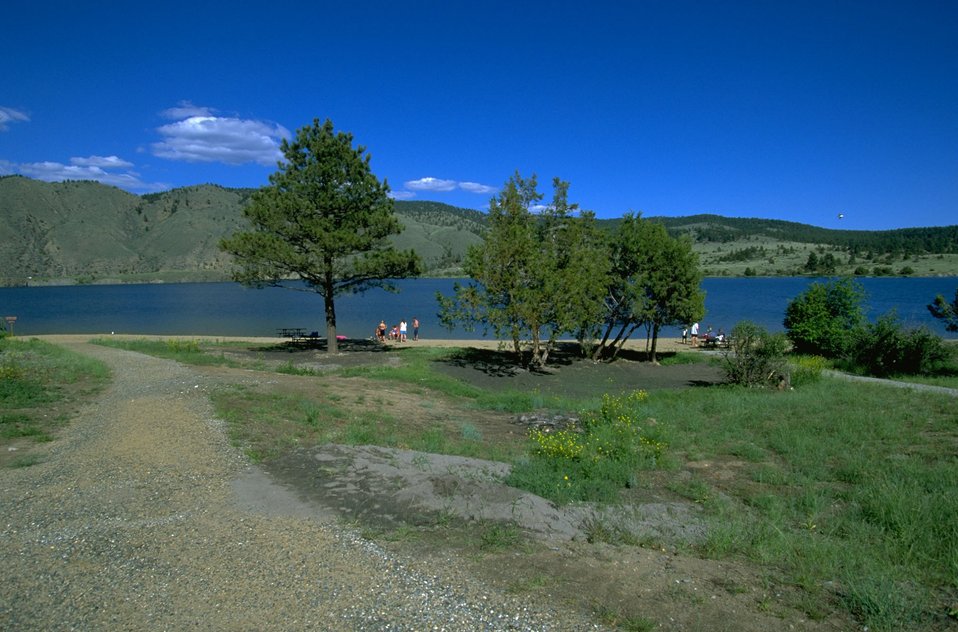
Trees and picnic area along Hauser Lake